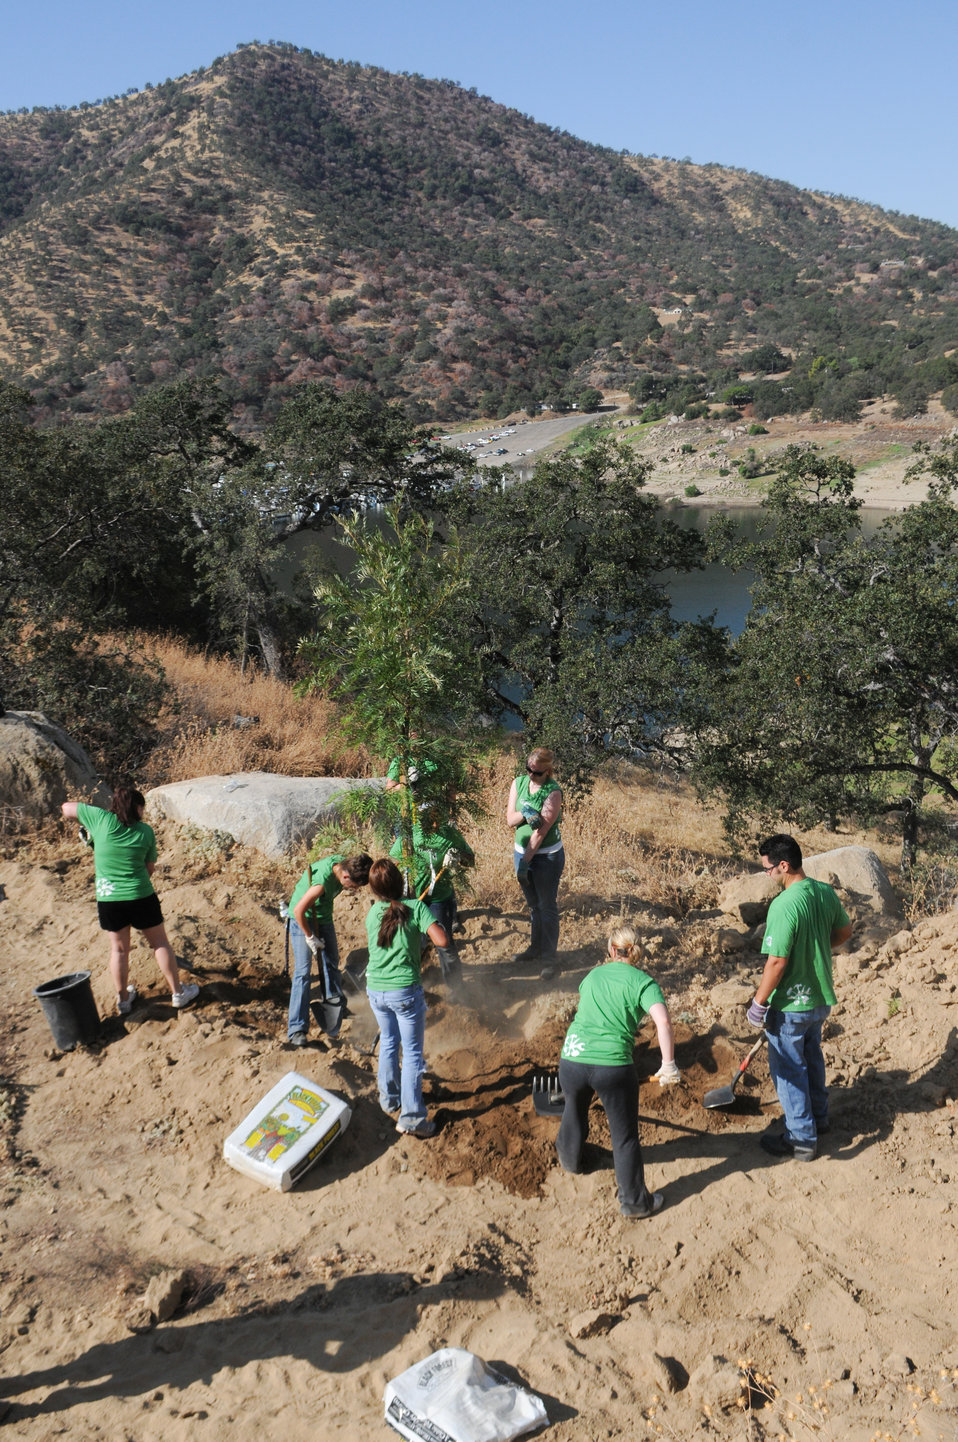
National Public Lands Day at Pine Flat Lake

Volunteers plant trees at Pine Flat Lake near Sanger, Calif., Sept. 24 in celebration of National Public Lands Day. More than 60 volunteers turned out to help plant trees and build a new sand volleyball court and horseshoe pits at the park. Pine Flat was one of seven U.S. Army Corps of Engineers Sacramento District recreation parks that participated in the event.